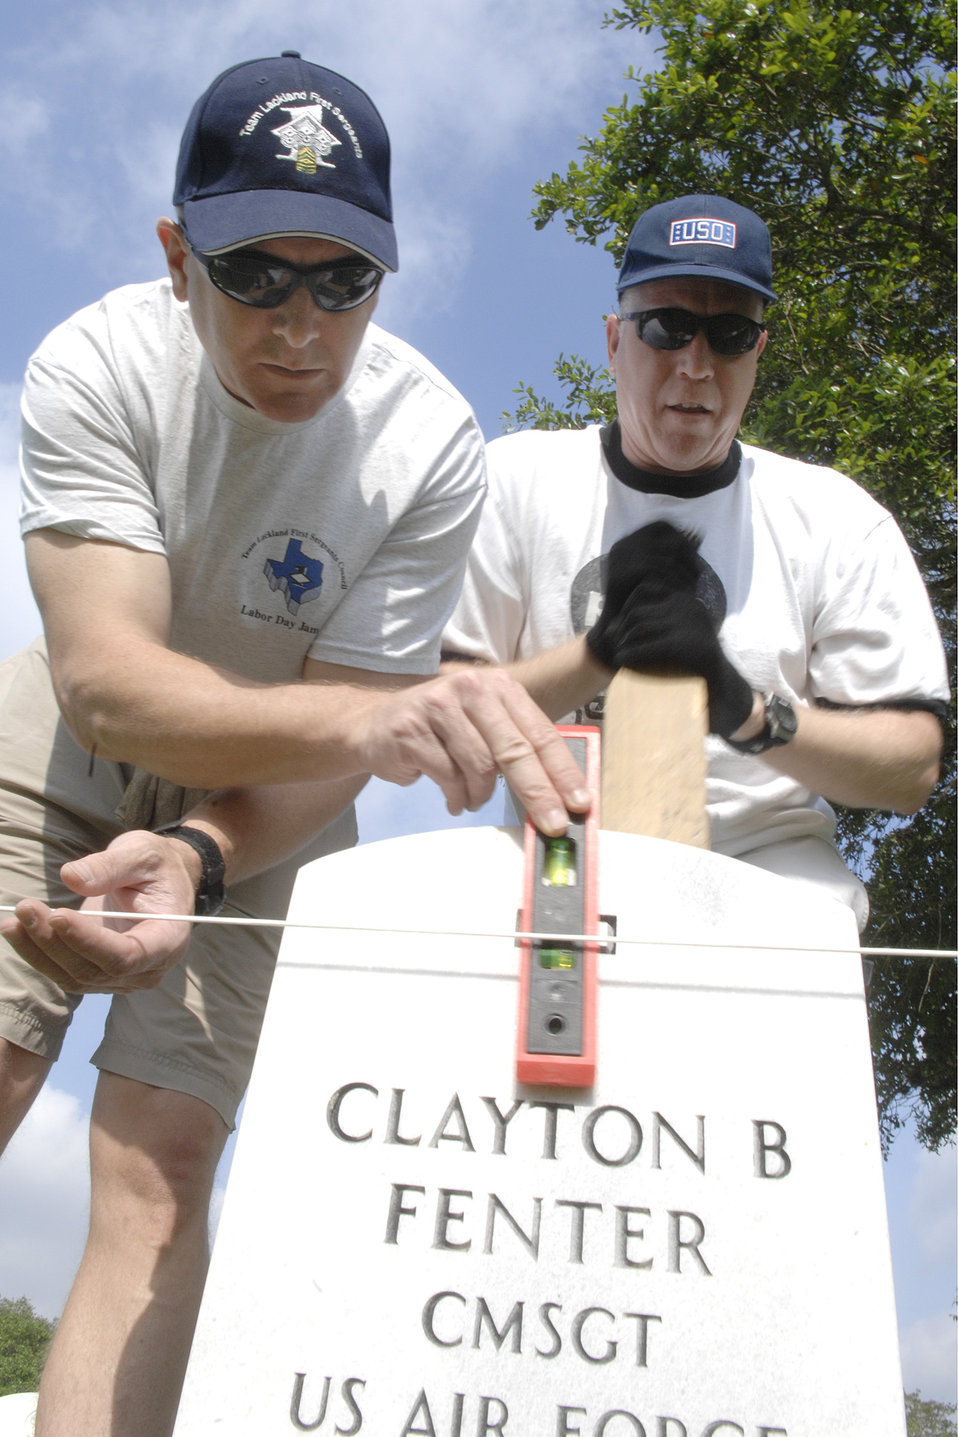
Serving those who served

Senior Master Sergeants Scott Wilcox and Scott Gomer straighten headstones May 15 at the Fort Sam Houston National Cemetery in San Antonio. This process aligns and straightens all the headstones and prepares the cemetery for funerals and the upcoming Memorial Day weekend. Sergeants Gomer and Wilcox are assigned to the Air Force News Agency in San Antonio.